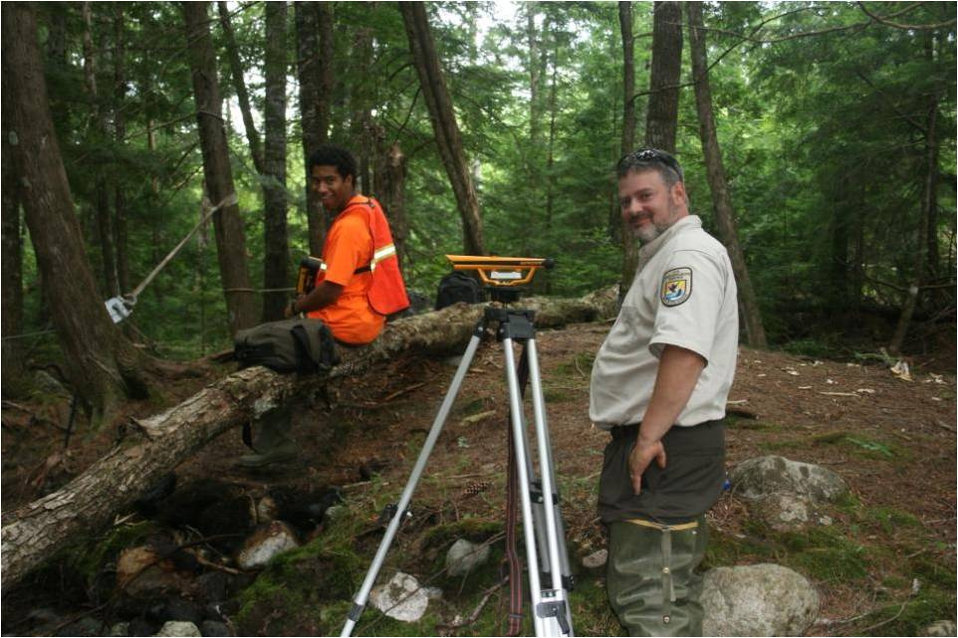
Wildlife surveys

U.S. Fish and Wildlife Service